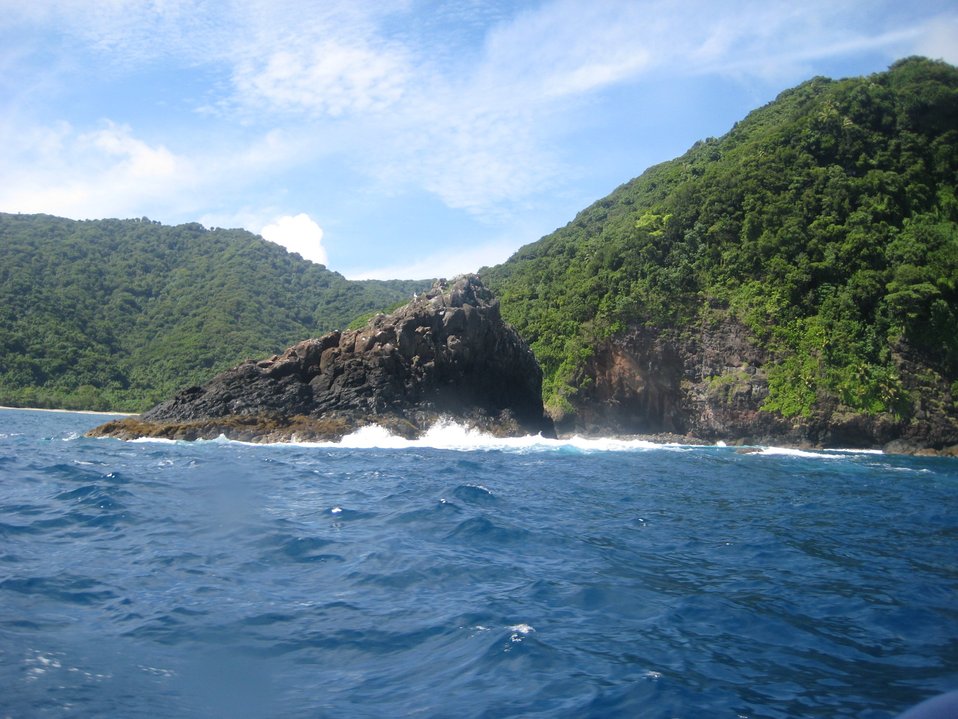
An offshore basaltic rock continually battered by the sea.